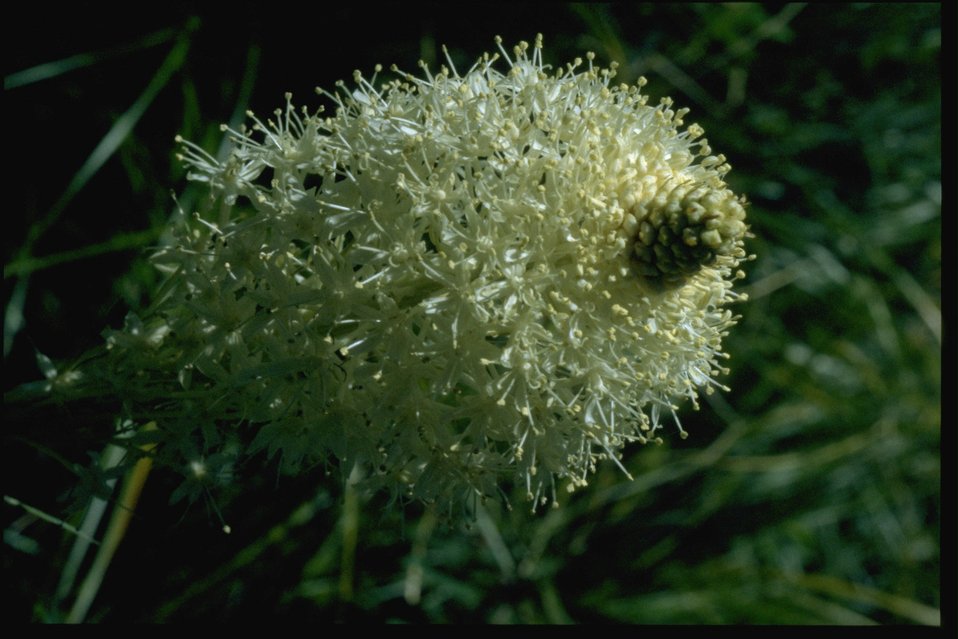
Closeup shot of Xenophyllum tenax.